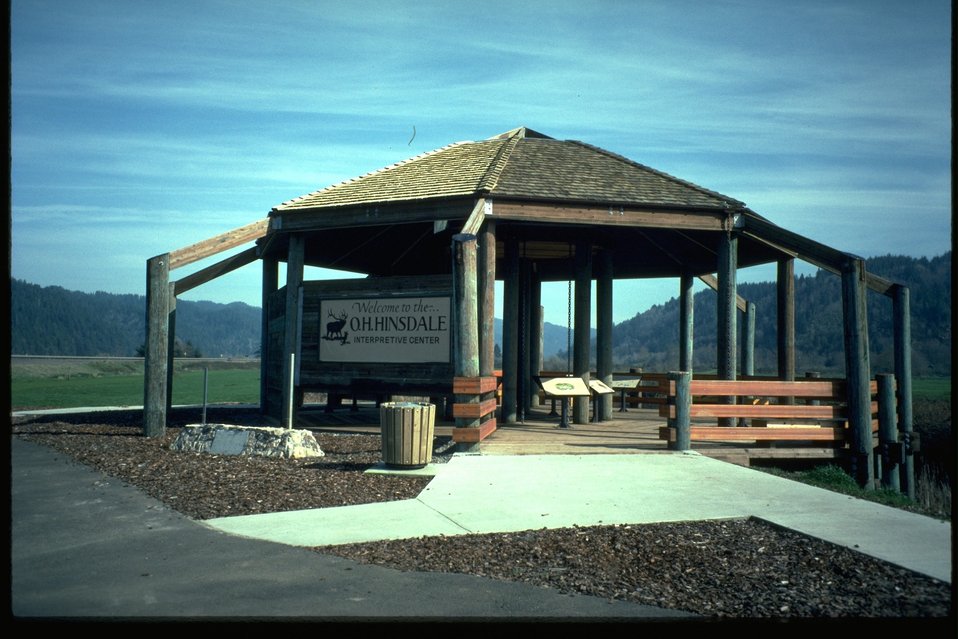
Interpretive kiosk at Dean Creek Wetlands.